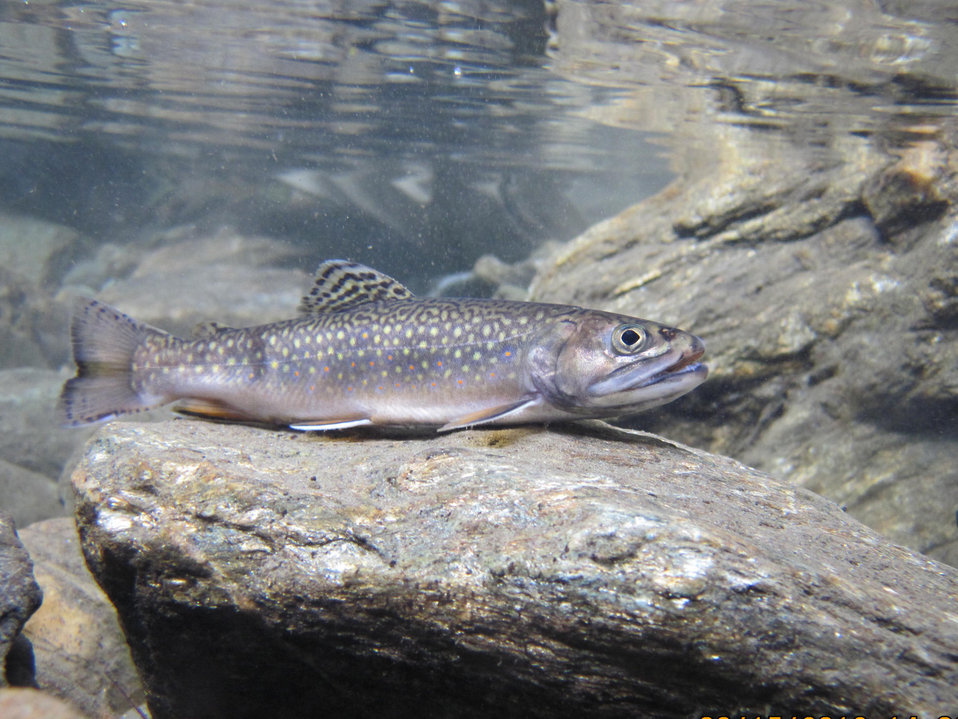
Brook trout in Marsh Brook, Rochester, NY.